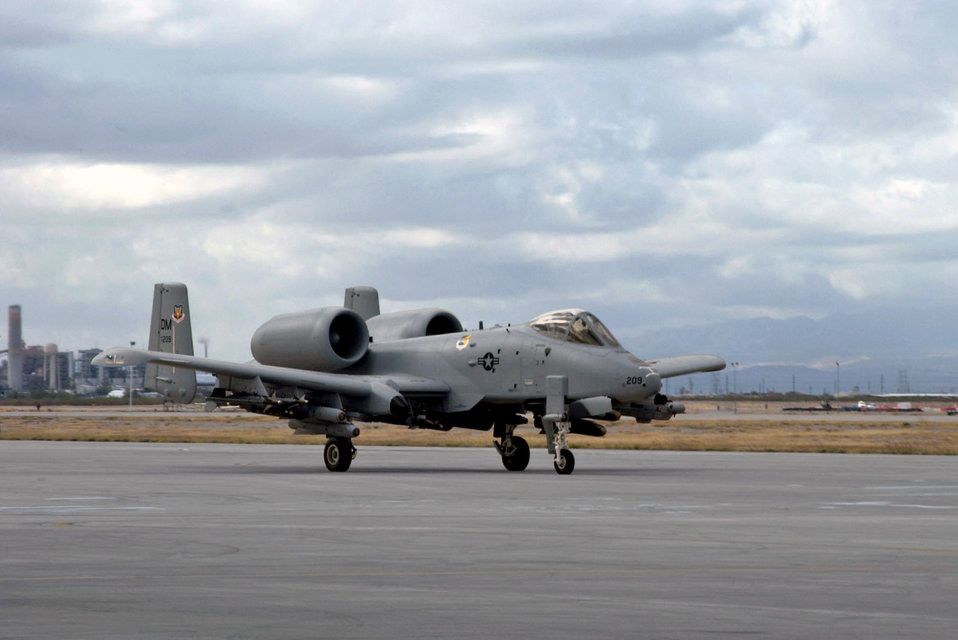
A-10s get digital makeover

A newly modified A-10C Thunderbolt II taxis in during the roll-out ceremony Nov. 29 at Davis-Monthan Air Force Base, Ariz. The A-10 has been modified with precision engagement technology to create an improved A-10C. The enhancements include full integration of sensors, multi-functional color displays and a new hands-on-throttle-and-stick interface.